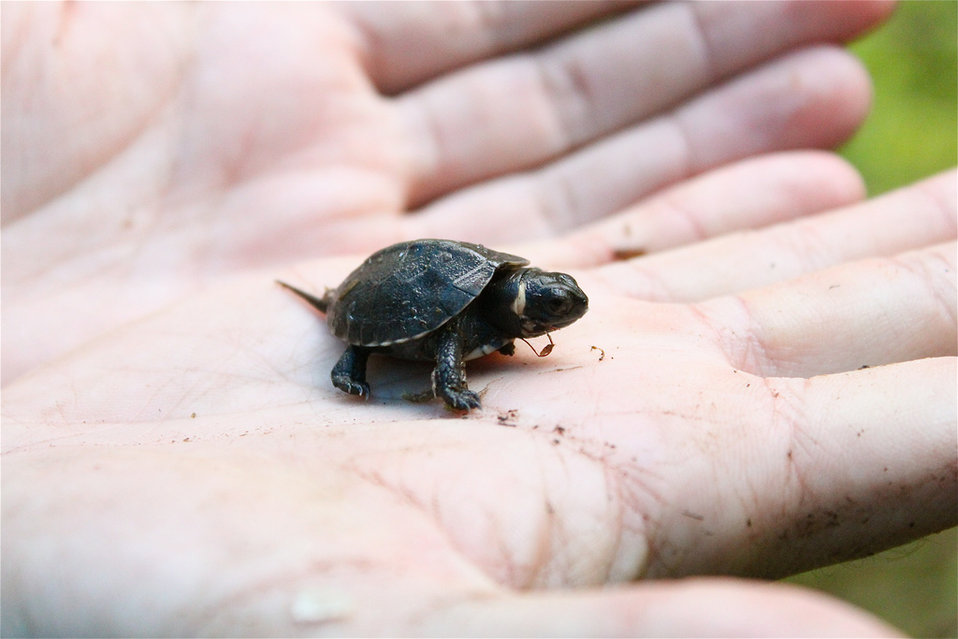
juvenile bog turtle

threatened
The bog turtle inhabits Wallkill River National Wildlife Refuge, NJ